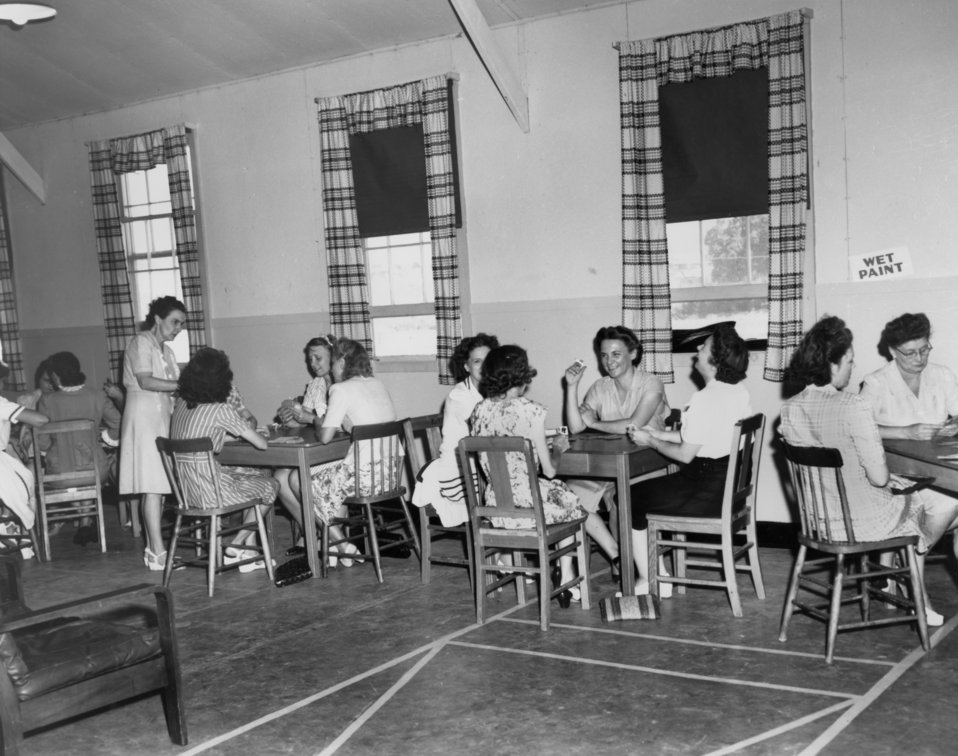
Midtown Community Hall Bridge Club 1945 Oak Ridge

pro841-1 DOE photo Ed Westcott 7-20-1945 Oak Ridge Tennessee